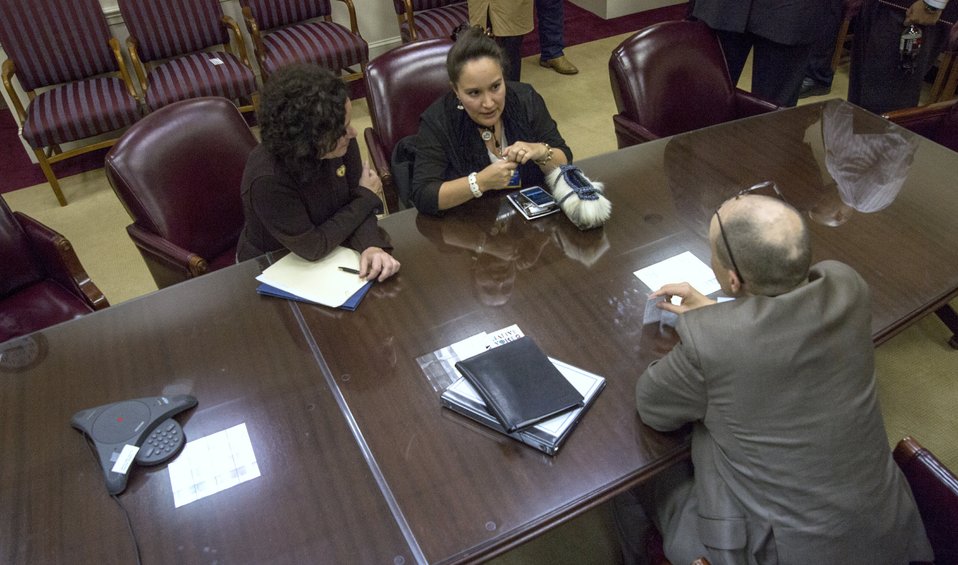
U.S. Department of Agriculture (USDA) Acting Under Secretary Rural Development (RD) Doug O’Brien, right, and USDA Deputy Under Secretary RD Patrice Kunesh, left, speak with North Star Group, D.C. Government and Community Affairs Senior Advisor Amy Sparck Dobmeier at a roundtable discussion on Agriculture, Community and Economic Development Opportunities in Indian Country with Agriculture with tribal leaders at USDA in Washington, D.C. on Tuesday, Nov. 12, 2013.